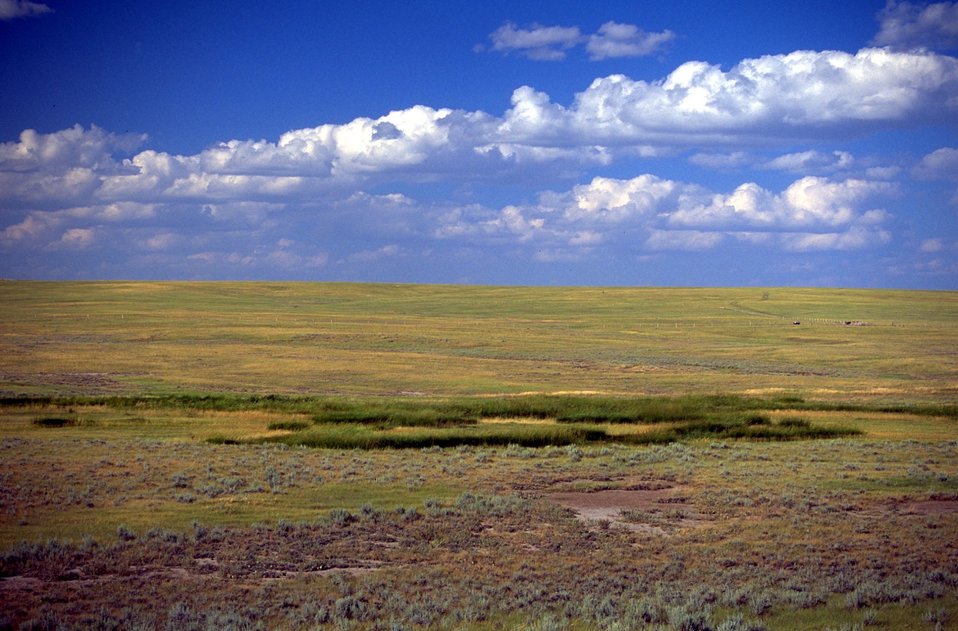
Prairie Cordgrass riparian Battle Creek